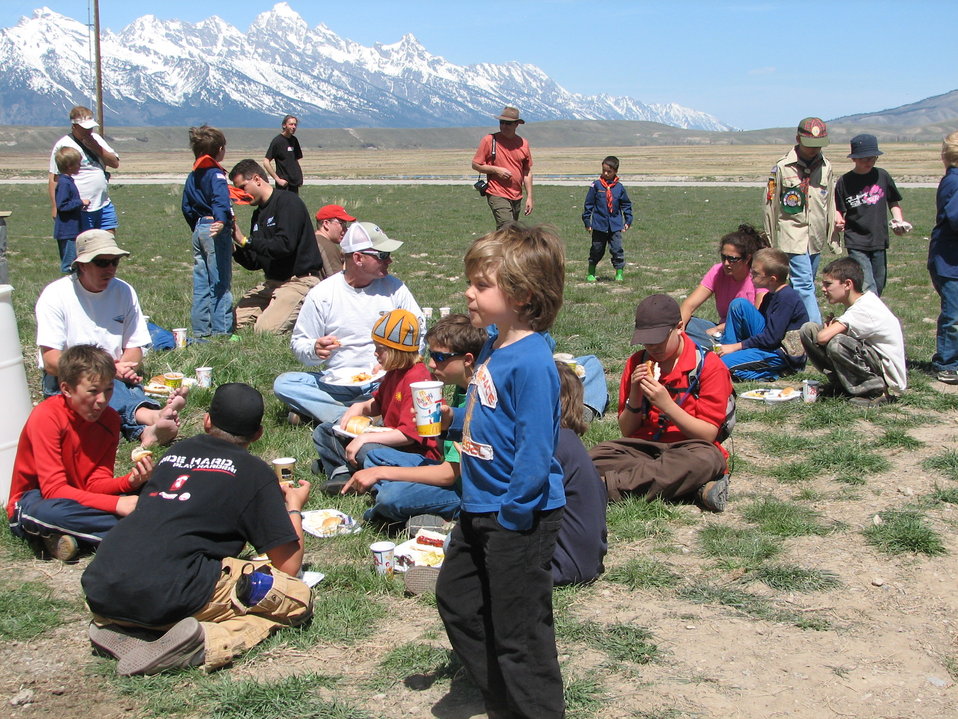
Reward for Hard Work

Scouts are treated to a picnic at the end of their antler collection day.